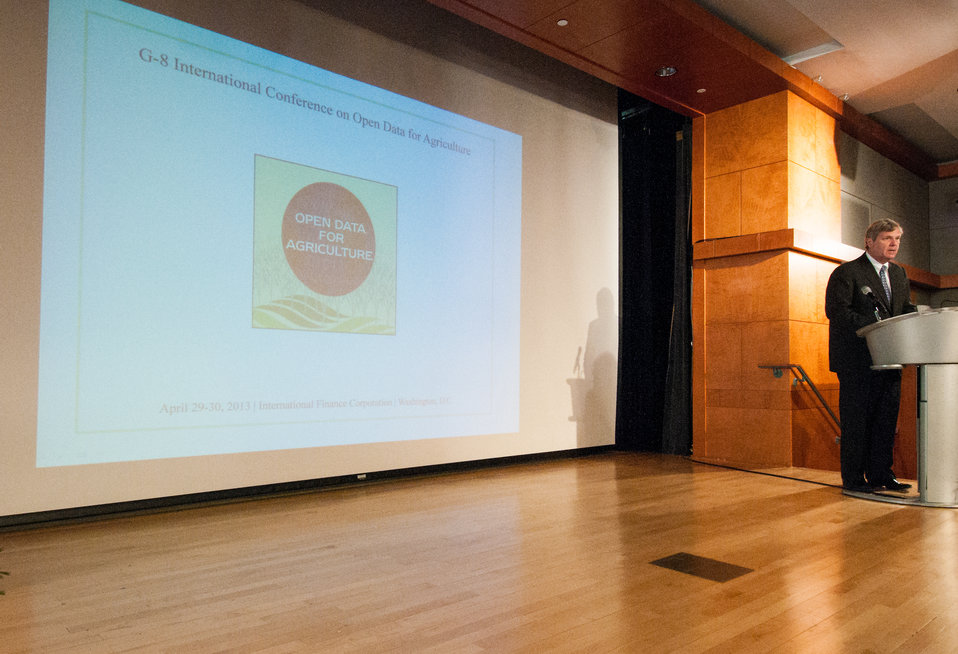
Agriculture Secretary Tom Vilsack makes opening remarks at the G-8 International Conference on Open Data for Agriculture in Washington, D.C. on Monday, Apr. 29, 2013. Secretary Vilsack announced the launch of a new 'virtual community' as part of a suite of actions, including the release of new data, that the U.S. is taking to give farmers and ranchers, scientists, policy makers and other members of the public easy access to publicly funded data to help increase food security and nutrition.